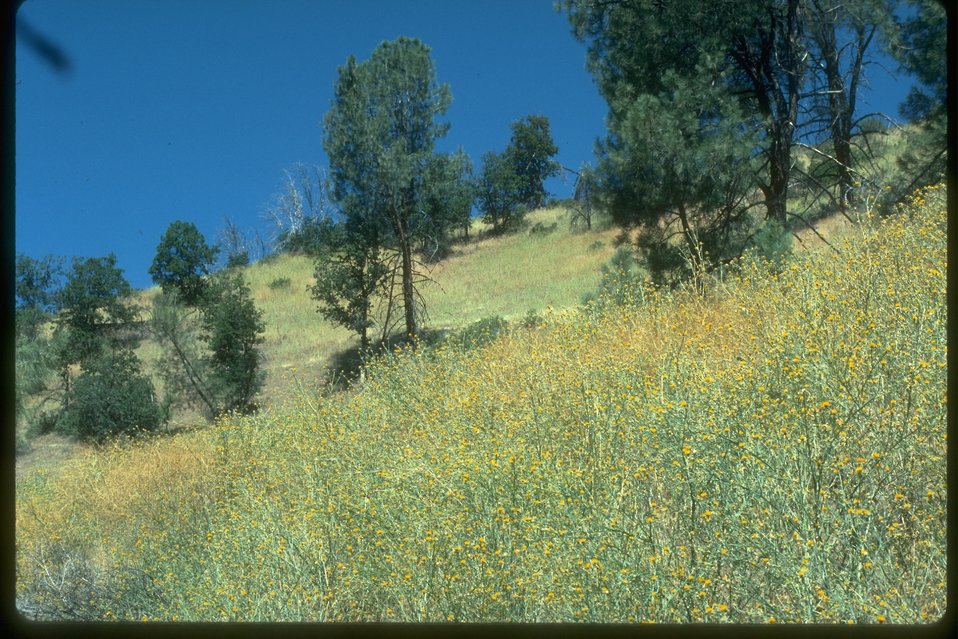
Yellow Starthistle on BLM land in Northern California, near Alturas.